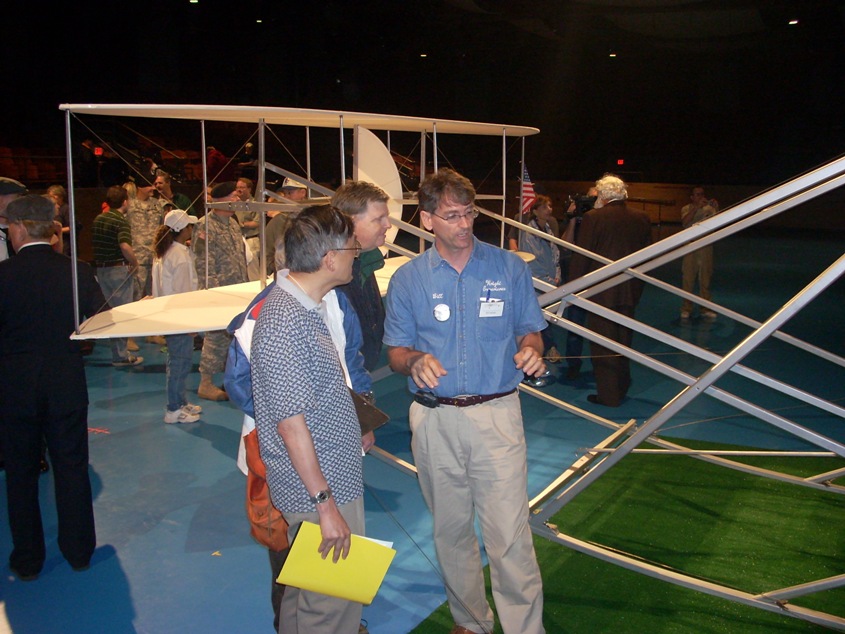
Wet celebration recognizes 100 years of military aviation

Bill Hadden of The Wright Experience speaks about the design of the Wright Brothers' aircraft during a Centennial of Military Aviation celebration Sept. 6, at Fort Myer, Va.